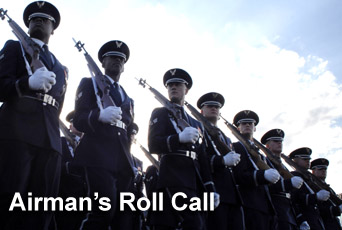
Airman's Roll Call

The Airman's Roll Call is a one-page print product, posted online every Wednesday, written so supervisors can read it to their Airmen during morning roll calls or weekly gatherings.